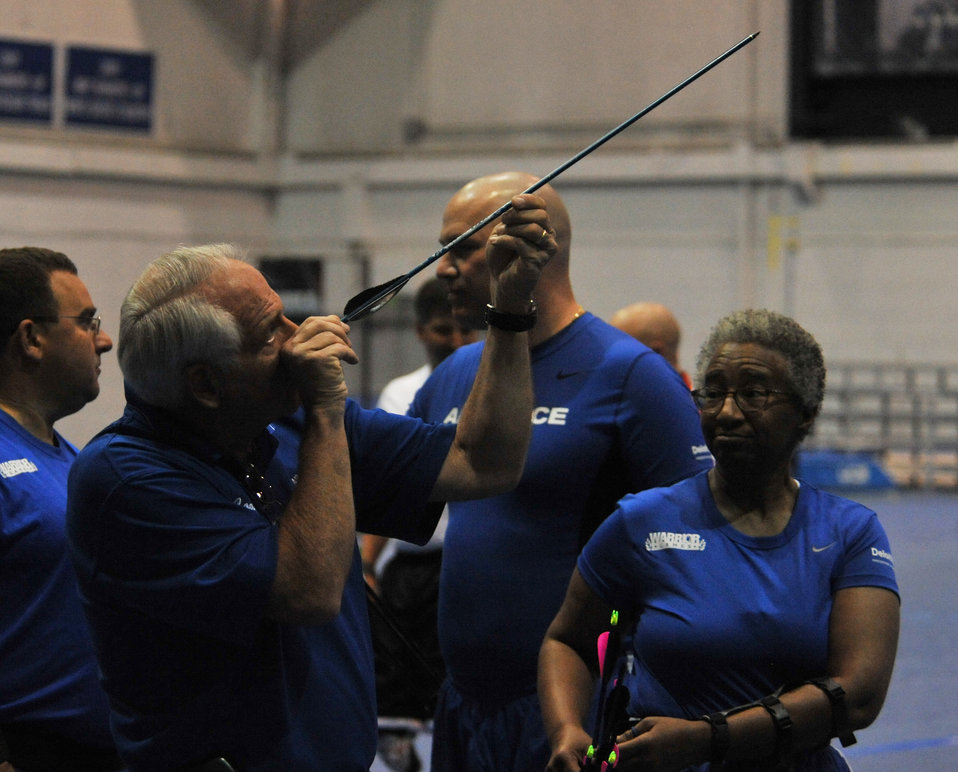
Warrior Games

Gary Fooshee, left, checks an arrow of Gwen Sheppard, right, during the archery competition of Warrior Games 2012 at the U.S. Air Force Academy in Colorado Springs, Colo., May 2, 2012. Fooshee is the coach of the Air Force team.